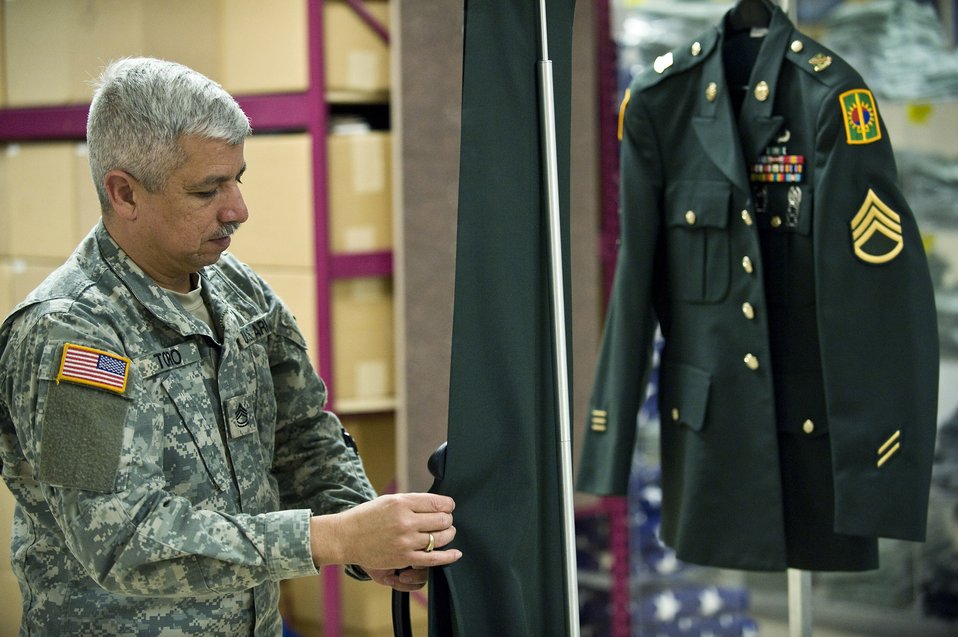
Air Force Mortuary Affairs Operations Center

U.S. Army Sergeant First Class Jimmy Toro, a mortuary affairs specialist, steam cleans the uniform of a fallen solider during preparation of the dignified transfer of remains process March 31. Sgt. Toro is on his third year-long voluntary deployment assisting the Air Force Mortuary Affairs Operations Center at Dover Air Force Base, Del. The servicemembers in the uniform section prepare uniforms for the fallen heroes and work with military escorts for the dignified-transfer-of-remains process. Sergeant Toro is deployed from the U.S. Army Reserve, 311th Quartermaster Company in Puerto Rico.